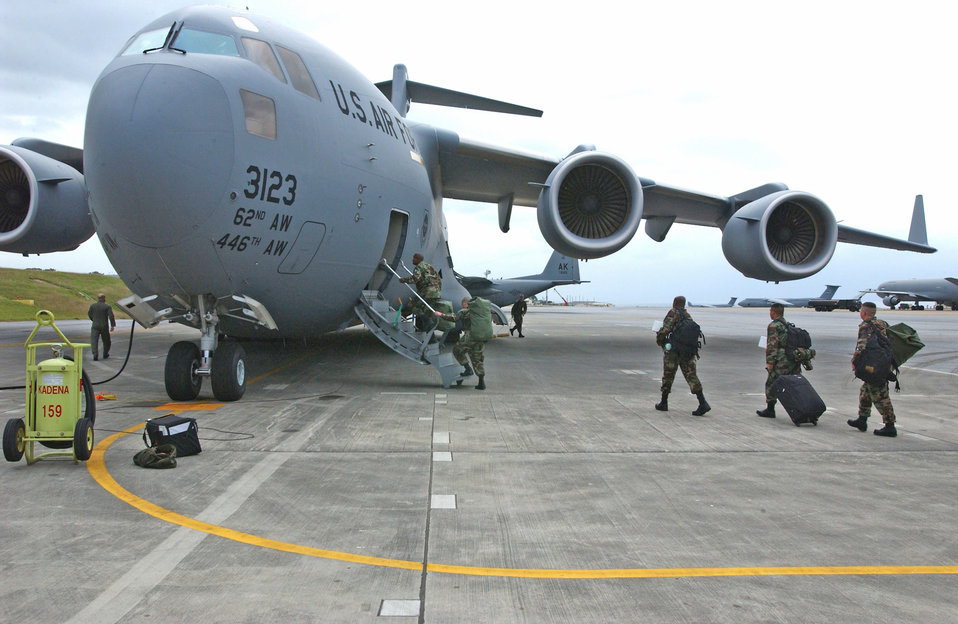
Airmen go to Sri Lanka

KADENA AIR BASE, Japan -- A team from several squadrons here board a C-17 Globemaster III for a 45-day deployment to Sri Lanka. The team deployed as part of disaster relief following the 9.0 magnitude earthquake that struck off the coast of Indonesia causing tsunami waves that have affected 12 countries and has killed more than 150,000 people. The 18th Wing is providing relief supplies and personnel to help with the humanitarian effort. The team is composed of Airmen form the base's 718th Aircraft Maintenance Squadron, 33d Aircraft Maintenance Unit, 33rd Rescue Squadron, 18th Logistics Readiness Squadron, and 18th Maintenance Squadron.